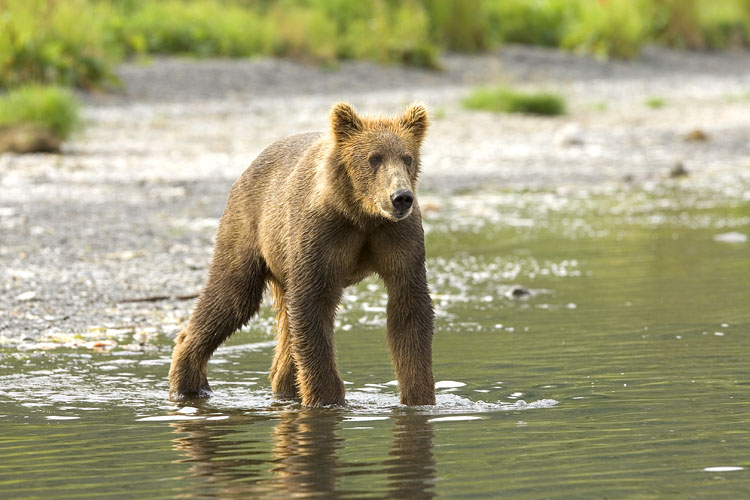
Wildlife of Kodiak Refuge